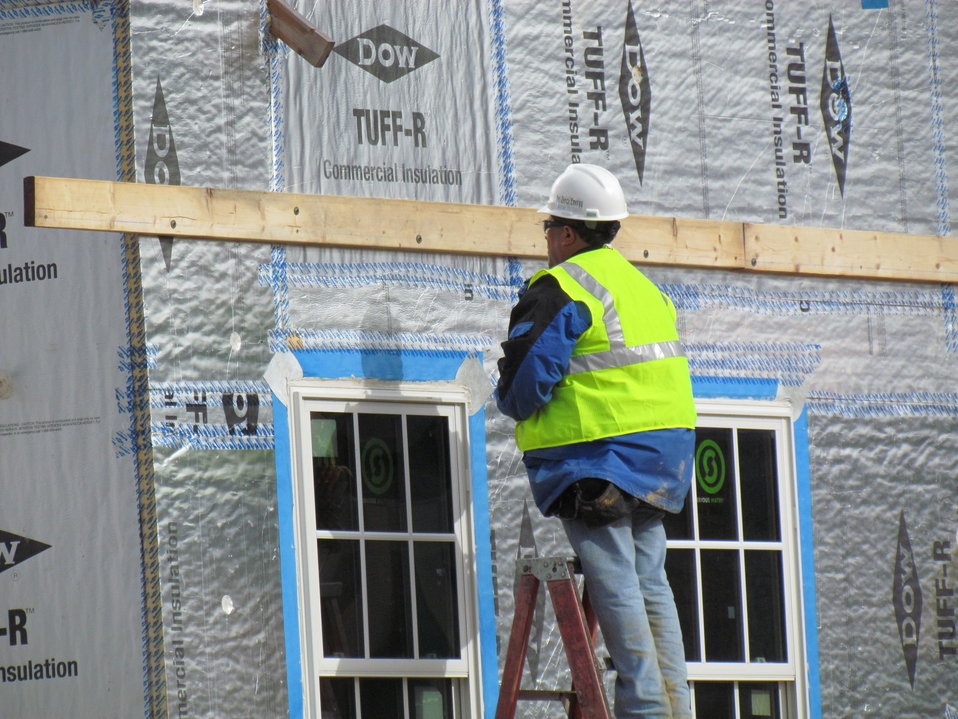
Net-Zero Energy Residential Test Facility – Construction photo showing attachment of the header for the front porch.